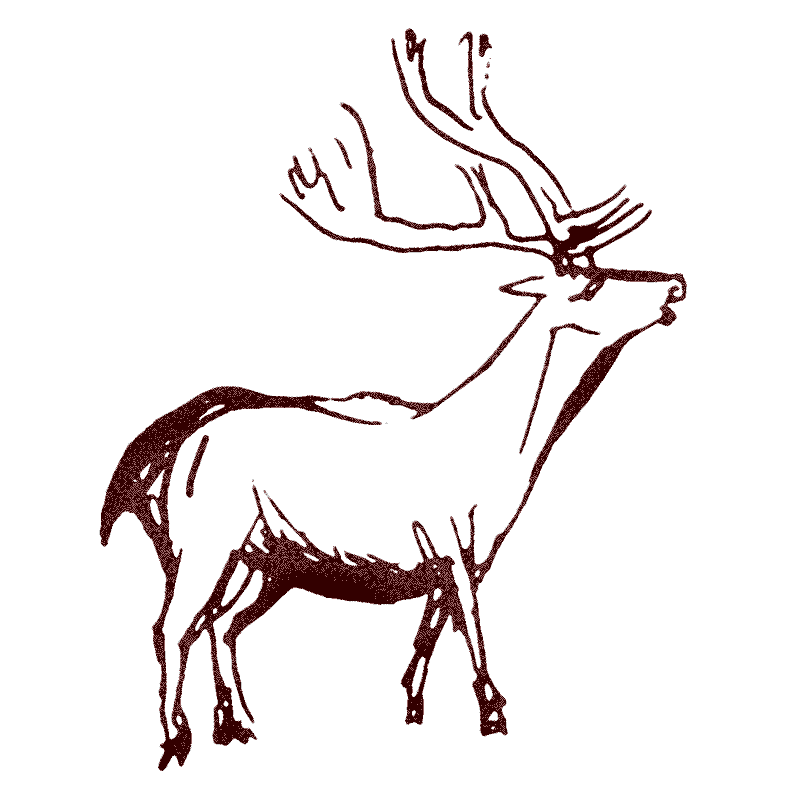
Gran ciervo macho del panel número 59, de la Galería B (segundo santuario) de la Cueva de La Pasiega, en el monte Castillo, localidad de Puente Viesgo (Cantabria, España)